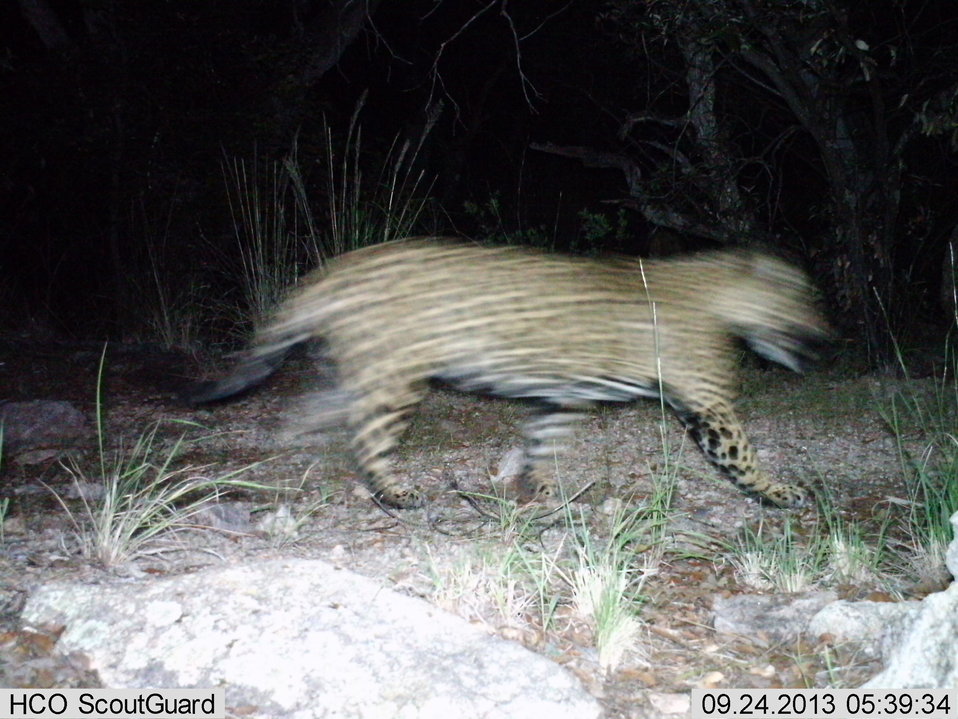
Male jaguar photographed by automatic wildlife cameras in the Santa Rita Mountains on September 24, 2013, as part of a U.S. Fish and Wildlife Service/Department of Homeland Security-funded jaguar survey conducted by University of Arizona. This photo is blurry. The jaguar has been photographed previously at this location.